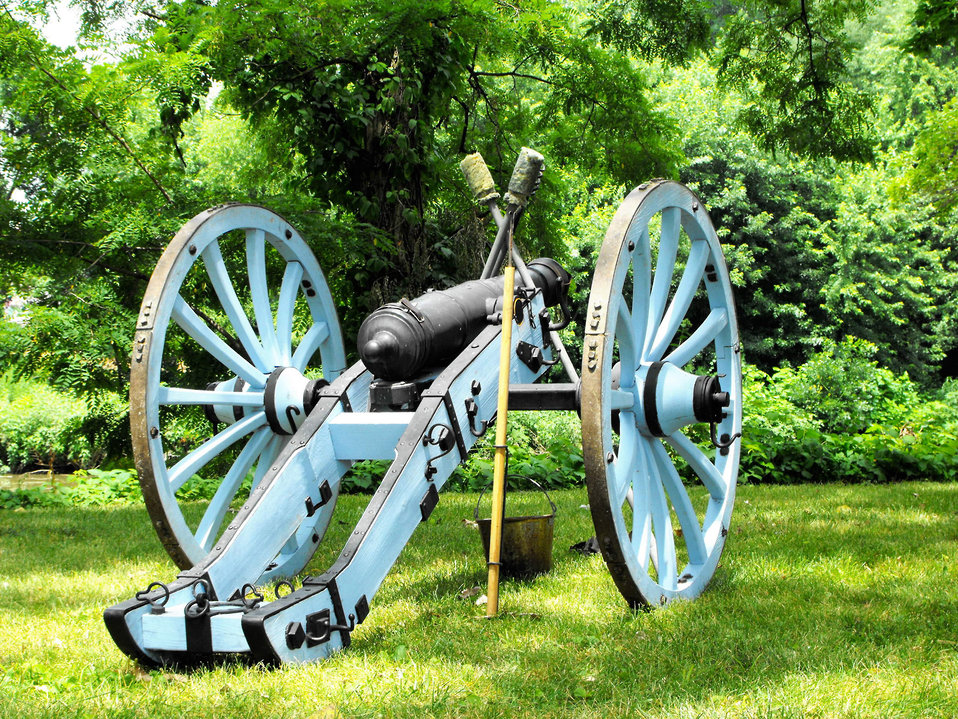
Cannon on river bank.